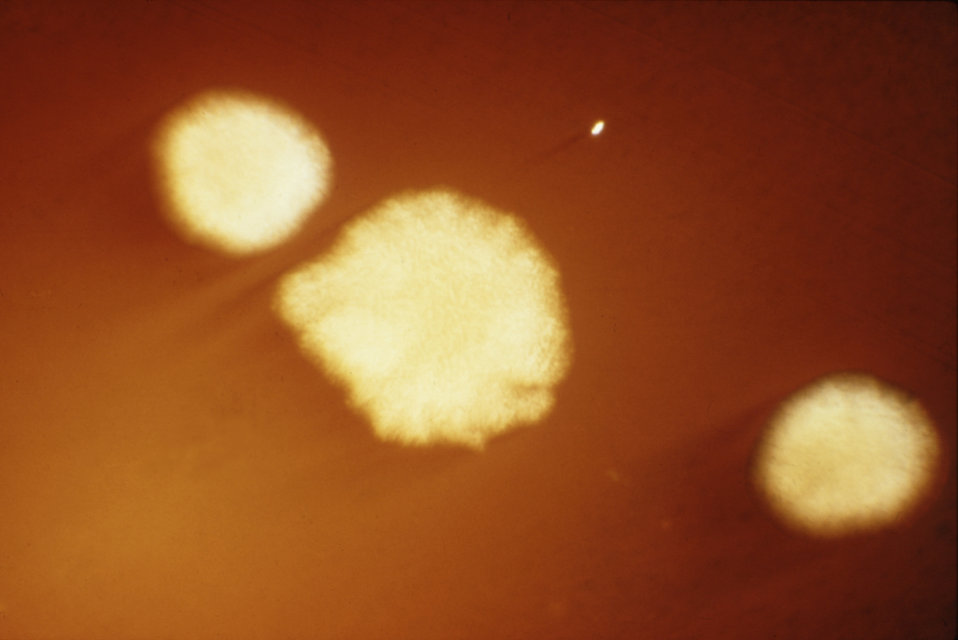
This photograph shows Clostridium subterminale colonies grown on a 48 hour blood agar plate; Magnification 15X.